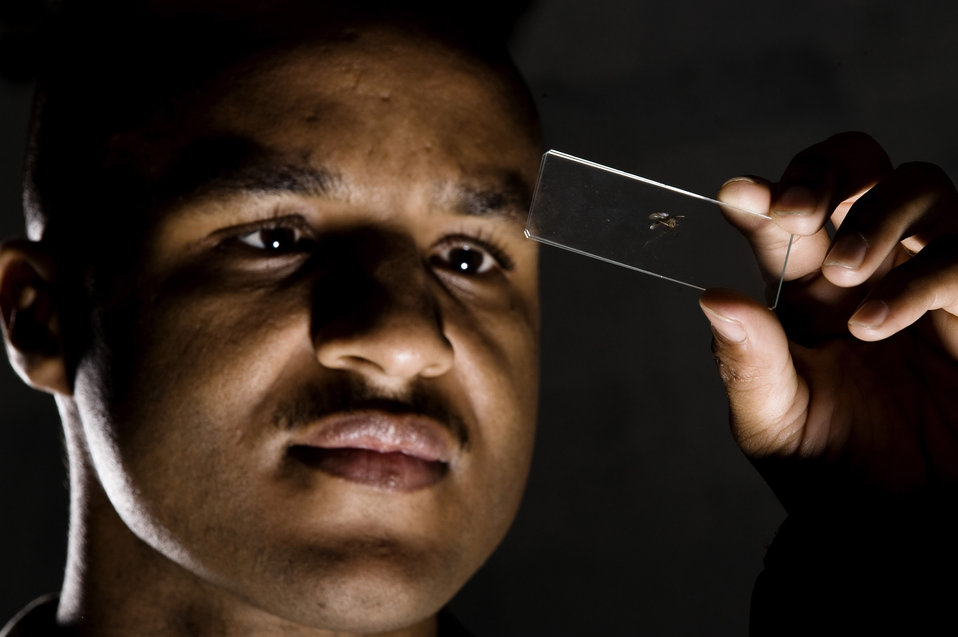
Eielson NCO bugs mosquitos

Tech. Sgt. Christopher Beach holds up a slide containing a mosquito prior to identifying it under a microscope Aug. 14. Sergeant Beach has 20 strategically-placed mosquito magnets around the base to capture, identify, count and send mosquitoes to be tested for diseases. Last year, he caught more than 3 million mosquitoes. He is assigned to the 354th Civil Engineer Squadron entomology shop.